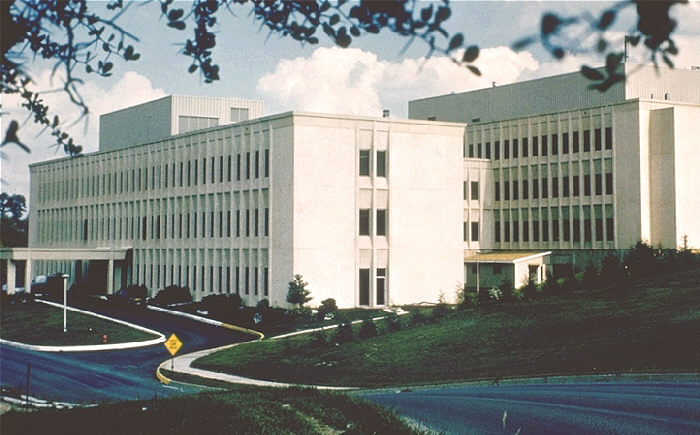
This 1979 image depicted a CDC facility in Morgantown, West Virginia.